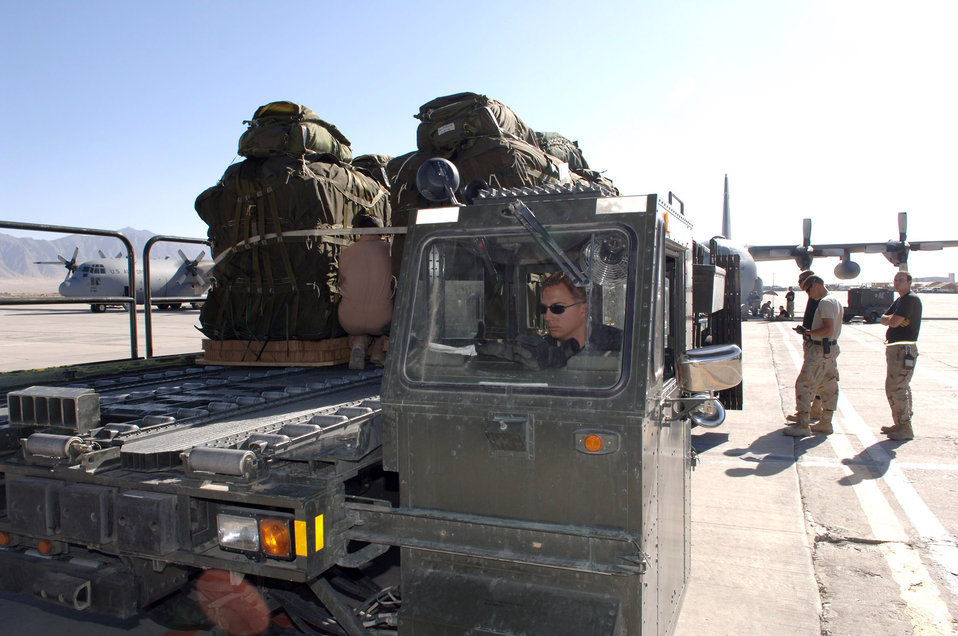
Operation Enduring Freedom

BAGRAM AIR BASE, Afghanistan - Staff Sgt. Tristan Schinzel, a ramp supervisor, maneuvers a 60-K loader into position to upload the first air drop supplies destined for Pakistan. The 14 pallets were the first to be air dropped into Pakistan. Soldiers and Airmen here assemble approximately 20,000 pounds of food, blankets, and supplies for the drop. To date, more than 180,000 pounds of food, water, cots and medical supplies have been flown out of Bagram headed for Pakistan. The sergeant, with the 455th Expeditionary Logistics Readiness Squadron here, is deployed from McChord Air Force Base, Wash.